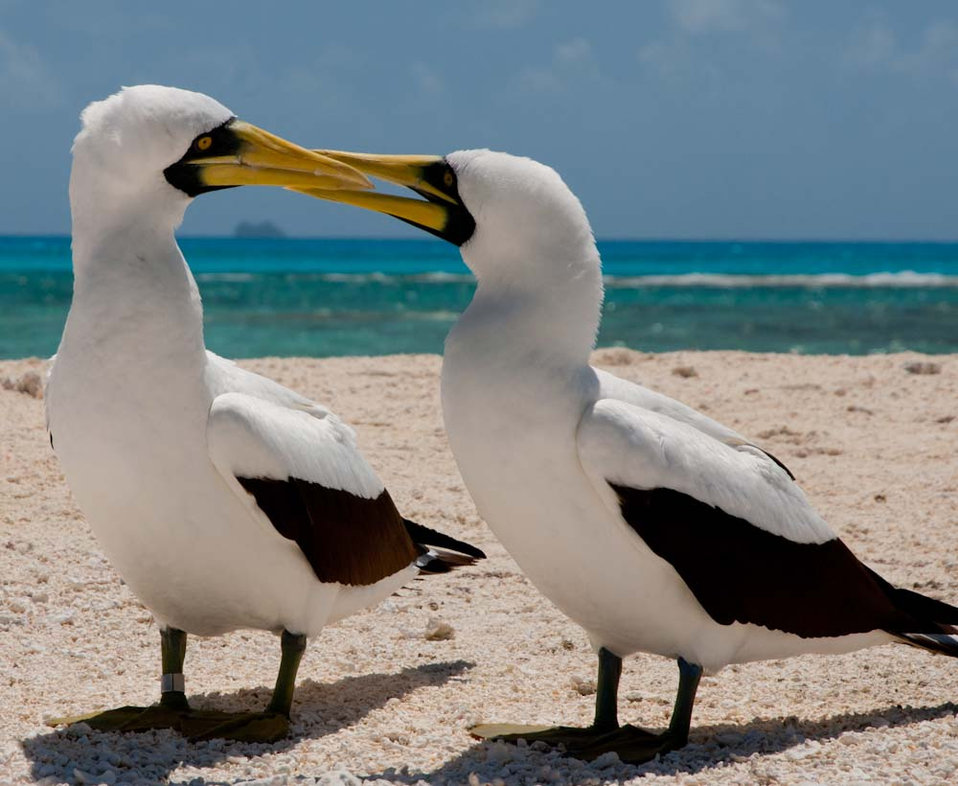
Masked Boobies Courting

French Frigate Shoals, Hawaiian Islands National Wildlife Refuge,
Papahānaumokuākea Marine National Monument
(Photo: Lindsay Kramer/USFWS)

In February, 2012, the Service released its plan to implement the Conserving the Future Vision, which was developed during a conference in July, 2011.